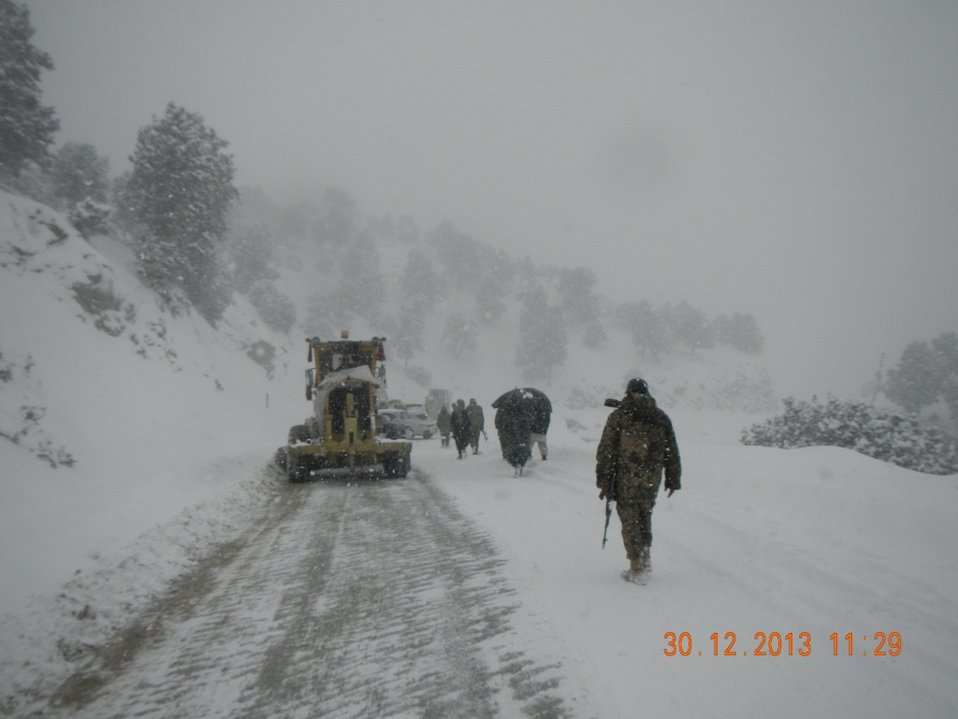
Snow removal work on the Gardez Khost road